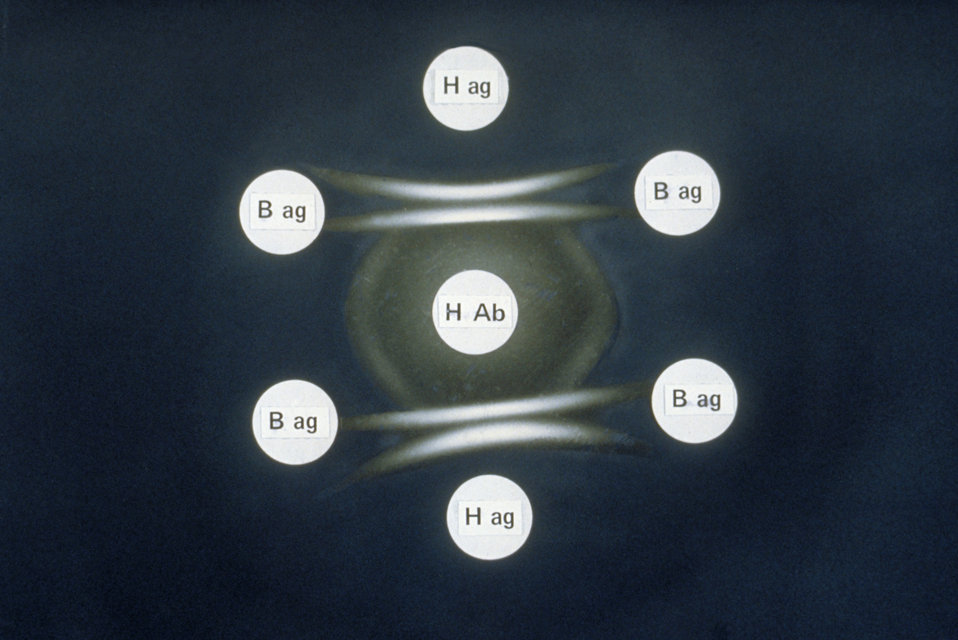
Double immunodiffusion in agar gel illustrating the exoantigen method